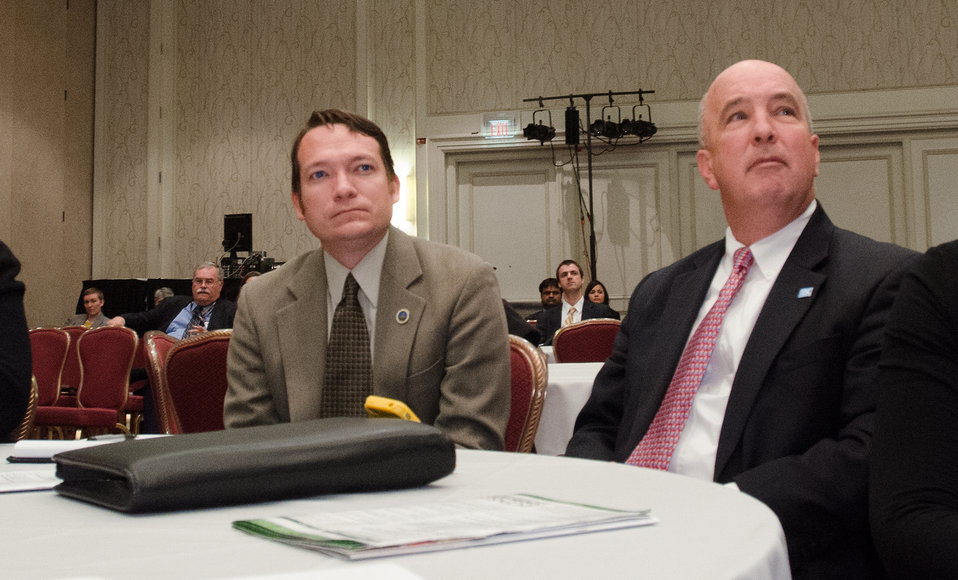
U.S. Department of Agriculture (USDA) Rural Development (RD) Oklahoma State Director David Ryan McMullen and USDA RD Iowa State Director Bill Menner listen to an energy conservation presentation at the Agriculture Outlook Forum on Feb. 22, 2013.